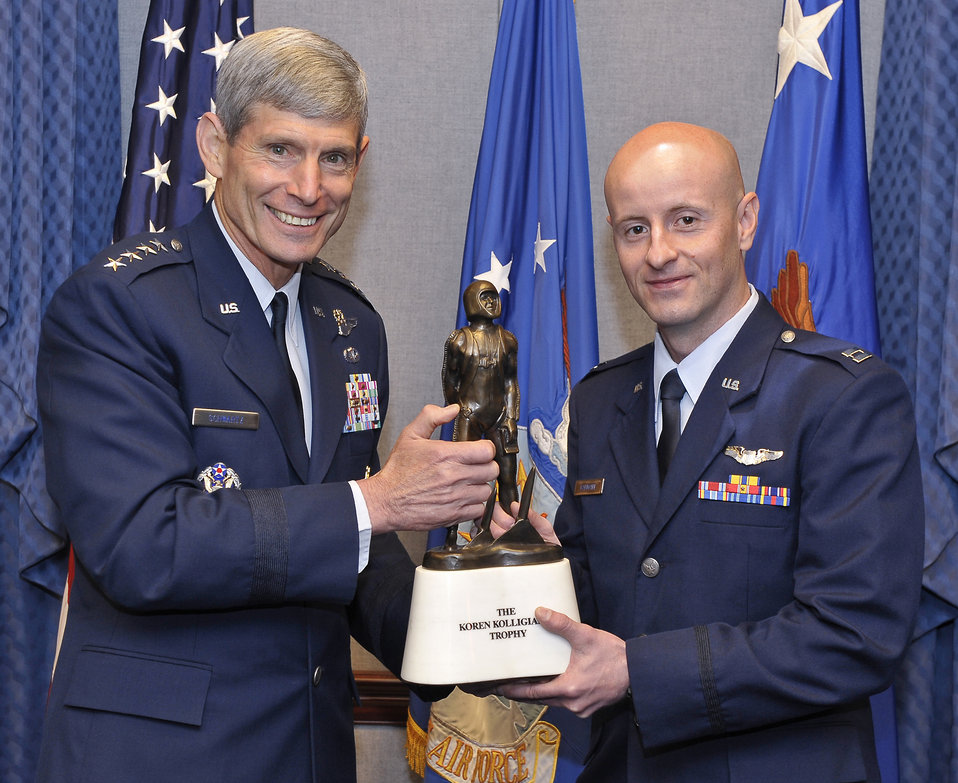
CSAF honors flight training instructor with Kolligian Trophy

Air Force Chief of Staff Gen. Norton Schwartz presents the Koren Kolligian Jr. Trophy to 2011 recipient Capt. Frank Baumann during a Pentagon ceremony June 27, 2012. Baumann is an instructor pilot stationed at Sheppard Air Force Base, Texas. The trophy, established in 1958, is the only Air Force individual safety award personally presented by the Air Force Chief of Staff.